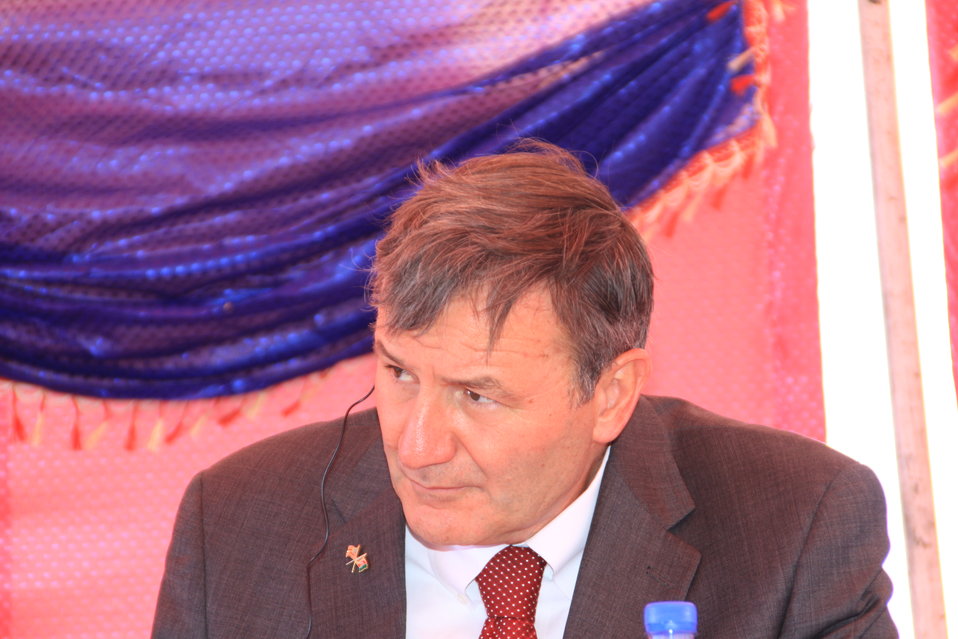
AVIPA Plus Wheat Seed Distribution 101005

US Ambassador Karl Eikenberry and USAID Acting Mission Director Kevin Brownawell joined the Minister of Agriculture, Irrigation and Livestock, H.E. Minister Mohammed Rahimi in signing a Memorandum of Understanding and distributing vouchers to area farmers for wheat and fertilizer.

US Ambassador Karl Eikenberry and USAID Acting Mission Director Kevin Brownawell joined the Minister of Agriculture, Irrigation and Livestock, H.E. Minister Mohammed Rahimi in signing a Memorandum of Understanding and distributing vouchers to area farmers for wheat and fertilizer.